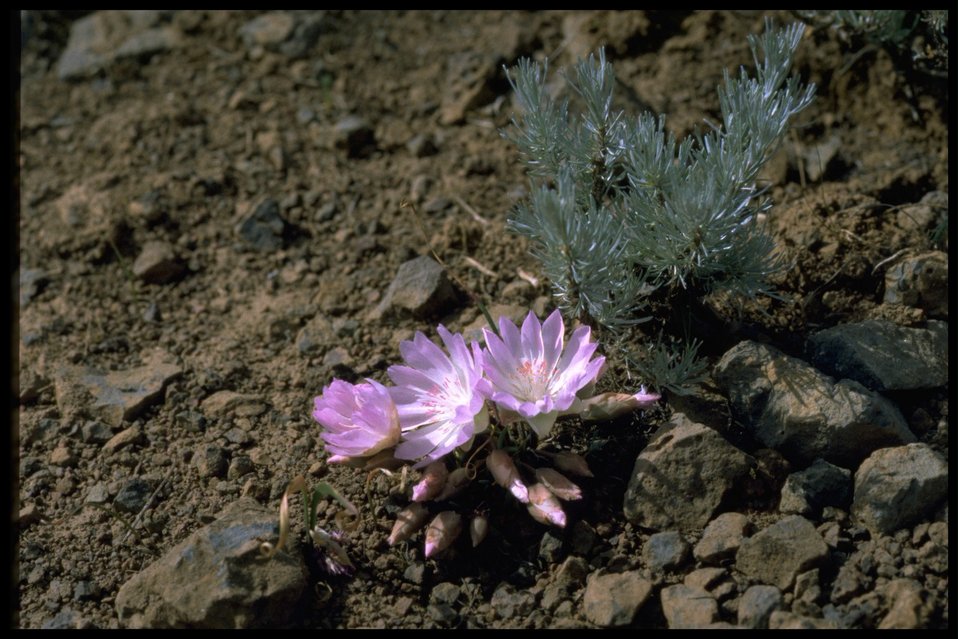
Medium shot of Bitterroot wildflower and stiff sagebrush